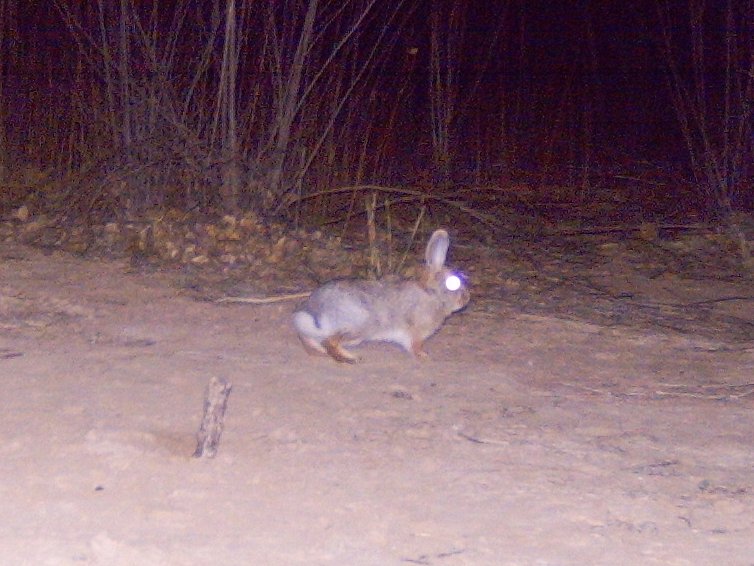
desert cottontail

Bosque del Apache National Wildlife Refuge, NM
Camera trap project by Matthew Farley, Jennifer Miyashiro and James Stuart
Photo made available by J.N. Stuart, Creative Commons